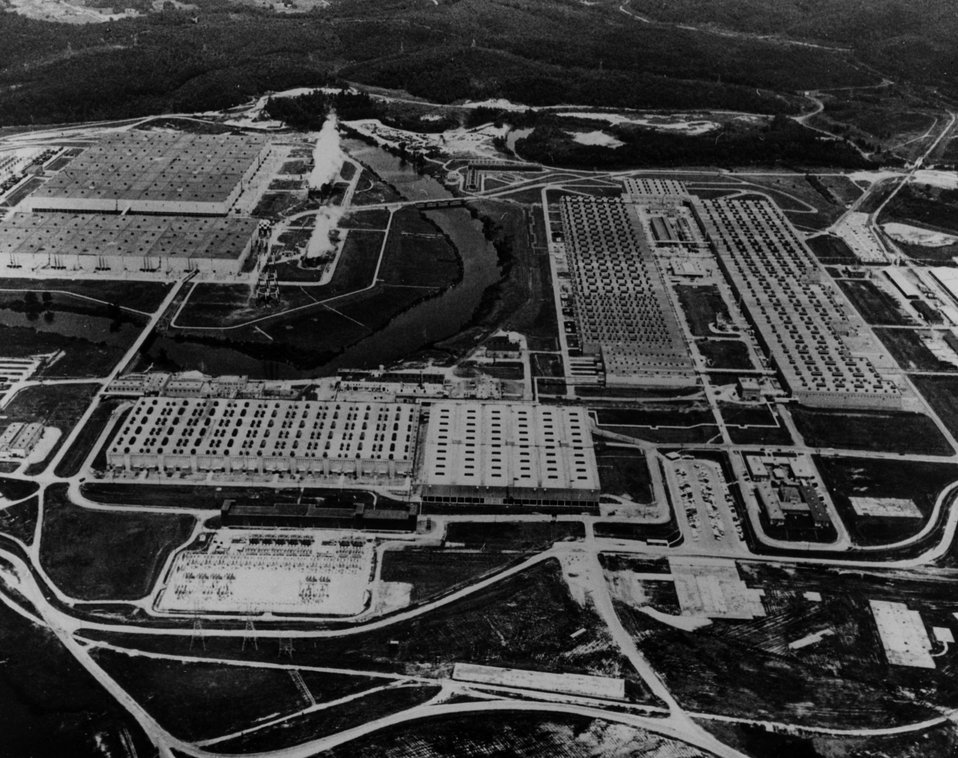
This huge plant at Oak Ridge, Tennessee, produces uranium-235 by the gaseous diffusion process. c. 1965